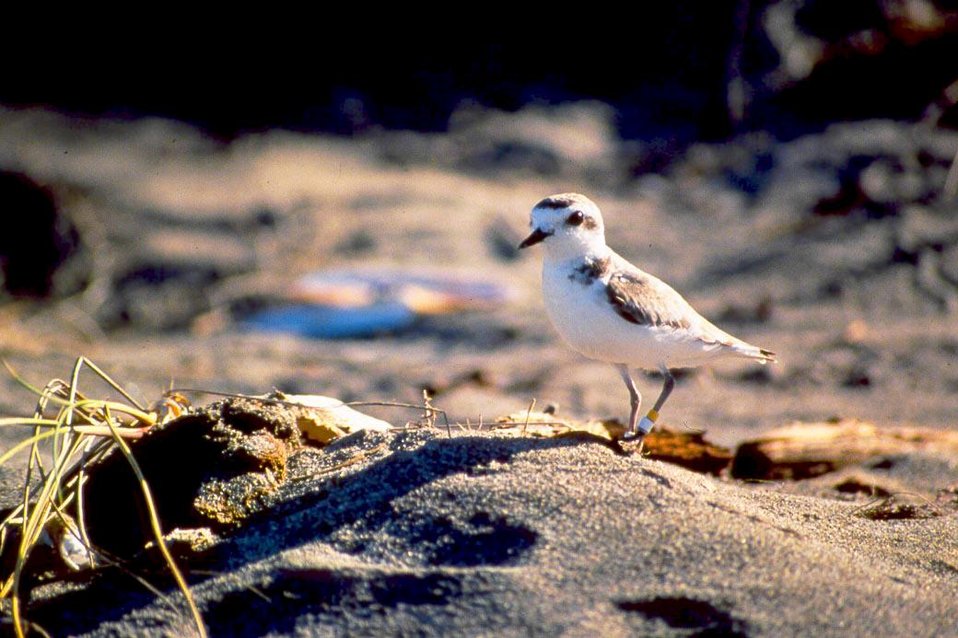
Western snowy plover